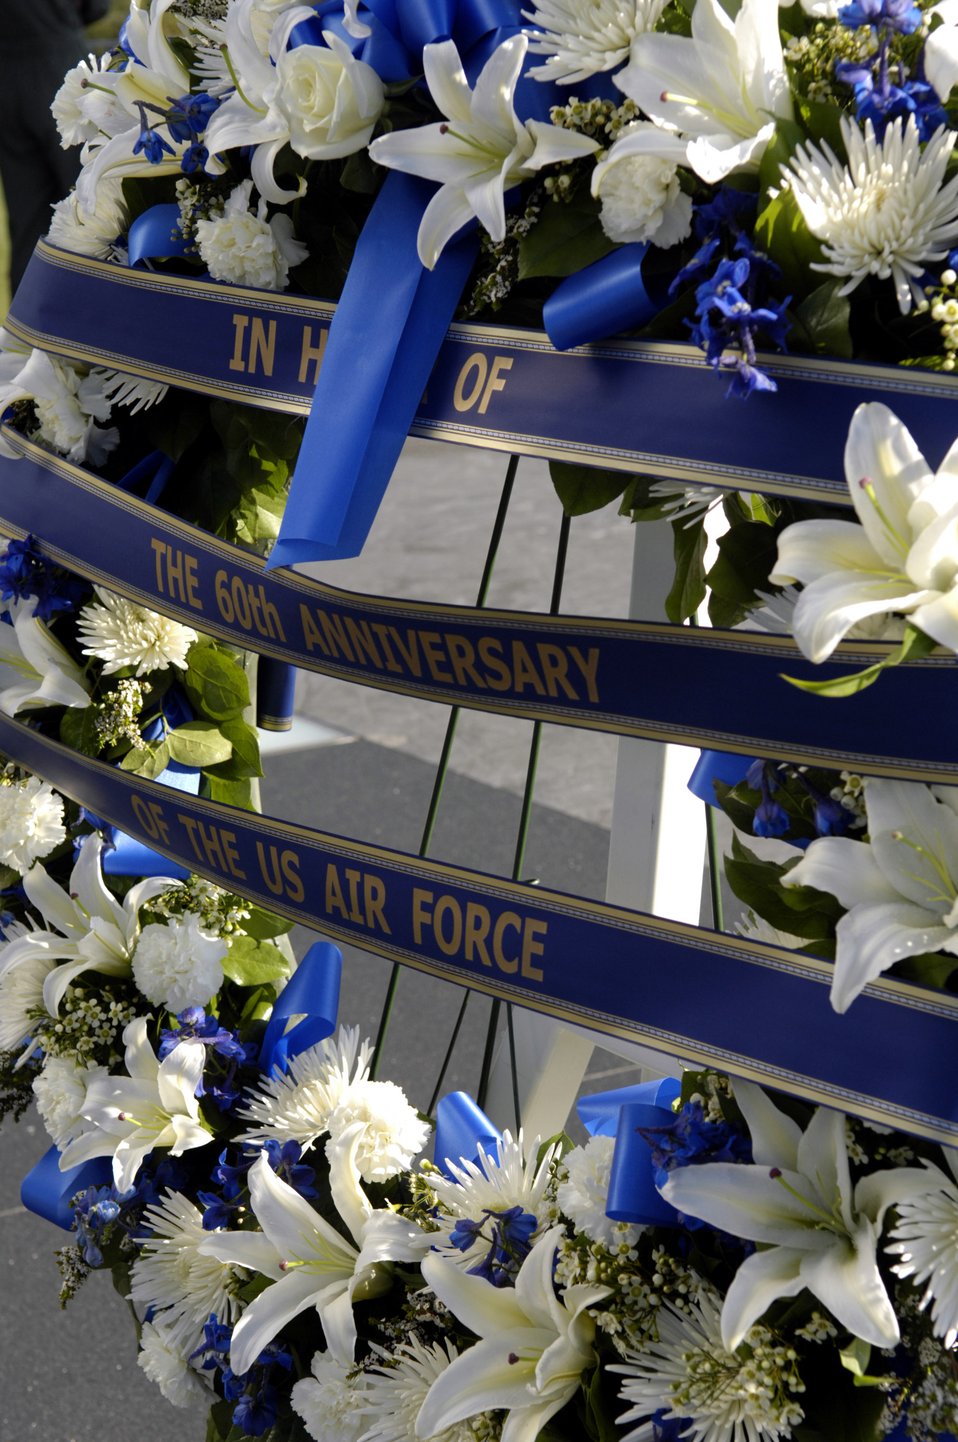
Air Force leaders gather at memorial for anniversary

This wreath was presented during the ceremony Sept. 18 at the Air Force Memorial in Arlington, Va., honoring the service's 60th anniversary. Event officials included Secretary of the Air Force Michael W. Wynne, Air Force Chief of Staff Gen. T. Michael Moseley and Chief Master Sgt. of the Air Force Rodney J. McKinley.